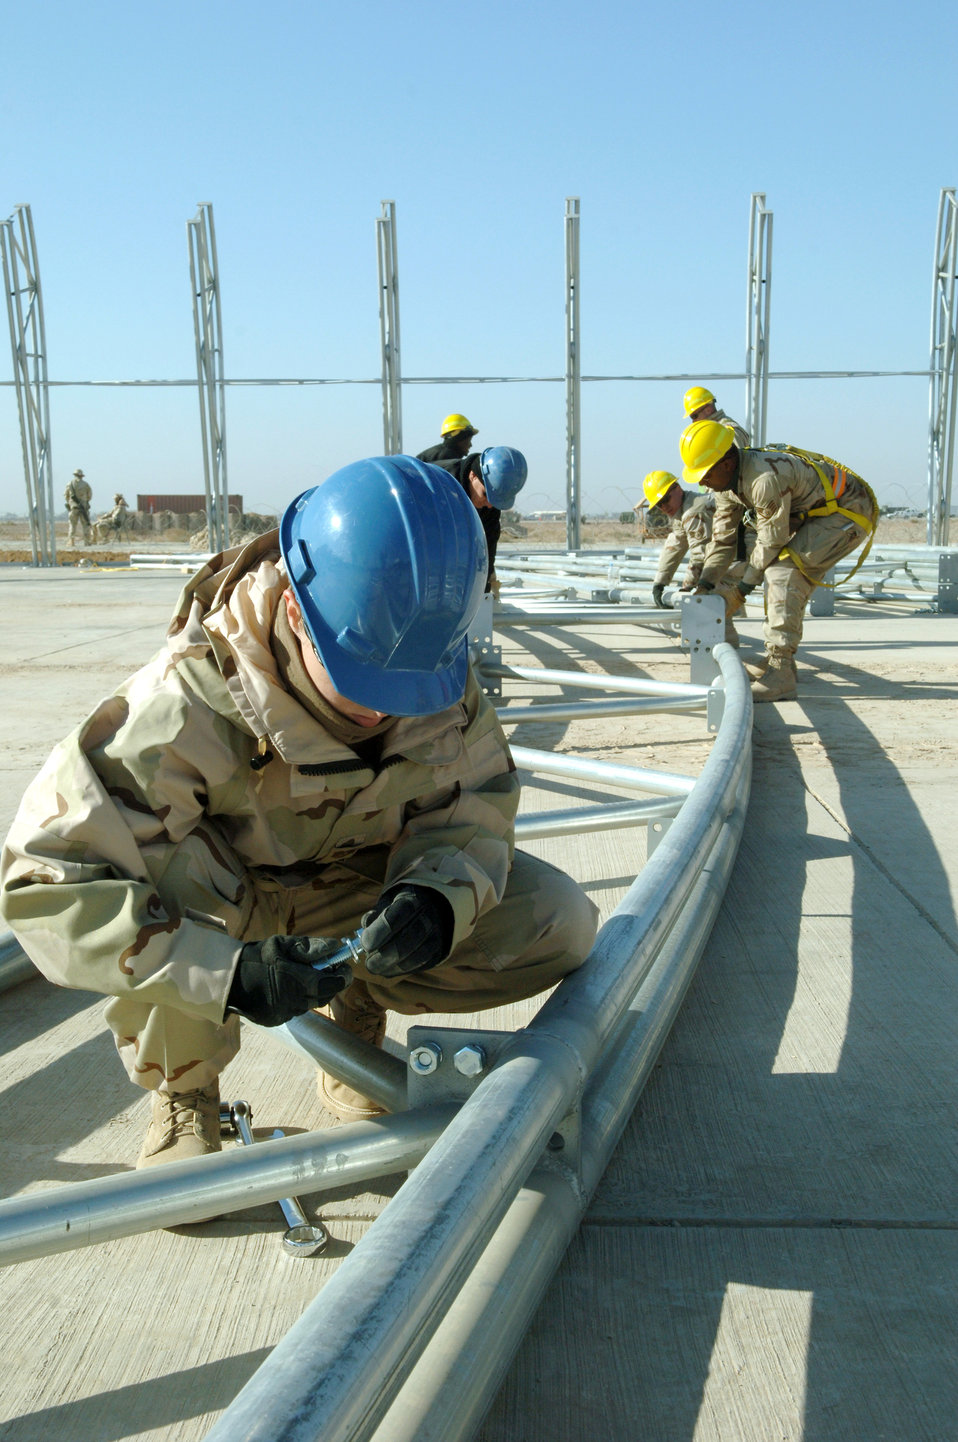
Shelter construction

Technical Sergeant Wendy Hood, from the 332nd Expeditionary Civil Engineer Squadron Structures shop, adjusts a wrench to fit a bolt on an arch Nov. 26 for the new Hunter Unmanned Aerial Vehicle shelter. The 20-day project at Balad Air Base, Iraq., will take approximately 3,200 man hours to complete.